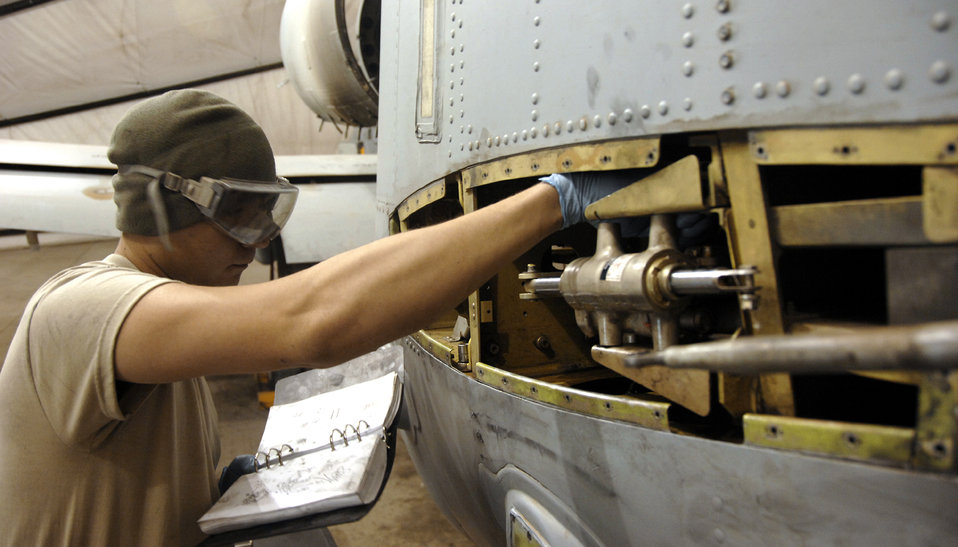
Maintainers keep aircraft soaring

Senior Airman David English installs a left rudder actuator on an A-10 Thunderbolt II Dec. 10, 2009, at Kandahar Airfield, Afghanistan. The left rudder actuator is a device that controls the rear flaps. Airman English is a crew chief with the 451st Expeditionary Maintenance Squadron maintenance flight.